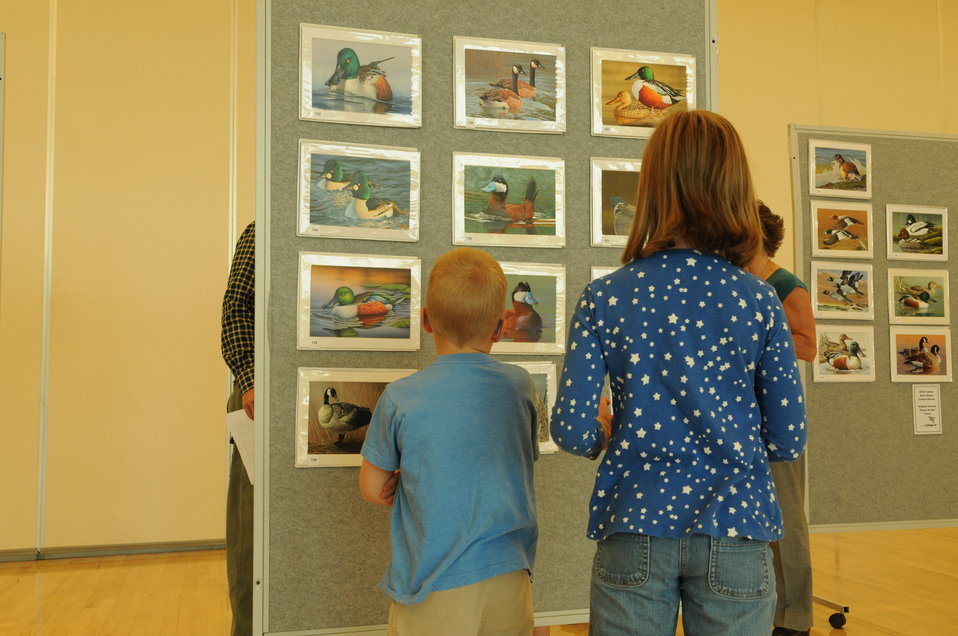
Artwork Displays

The U.S. Fish & Wildlife Service sponsored the 2012 Federal Duck Stamp Art Contest September 28 and 29 in Ogden, Utah, at Weber State University. A panel of five judges was responsible for choosing the art work used to design the 2013-2014 Migratory Bird Hunting and Conservation Stamp.